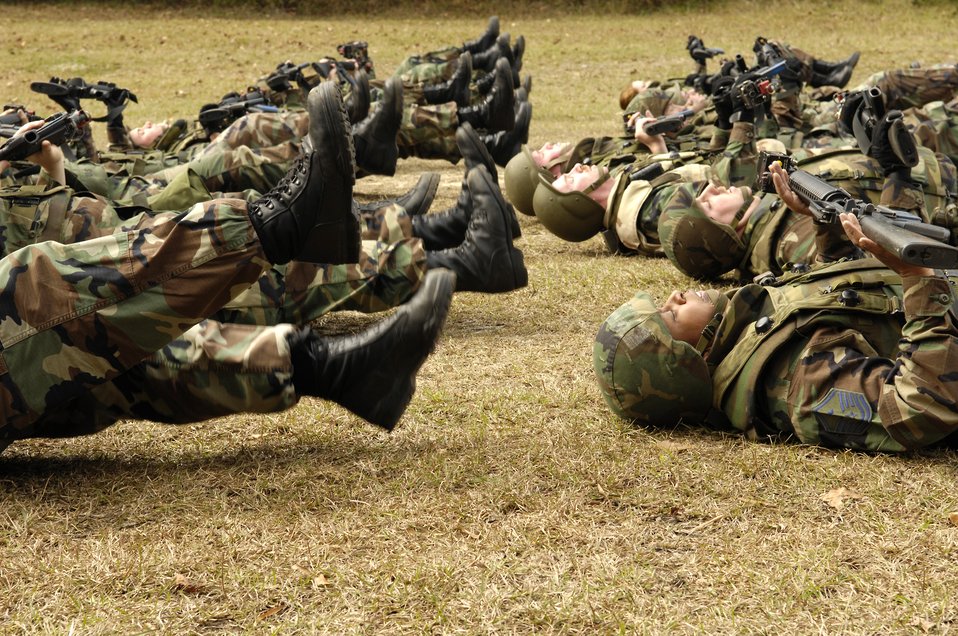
Testing their skills

Airmen exercise flutter kicks as they hold their weapons up in the air during the Expeditionary Combat Skills Training Dec. 7 at Charleston Air Force Base, S.C., The ECST is a three-day tactical operations course to prepare members of the 437th Airlift Wing for deployment.